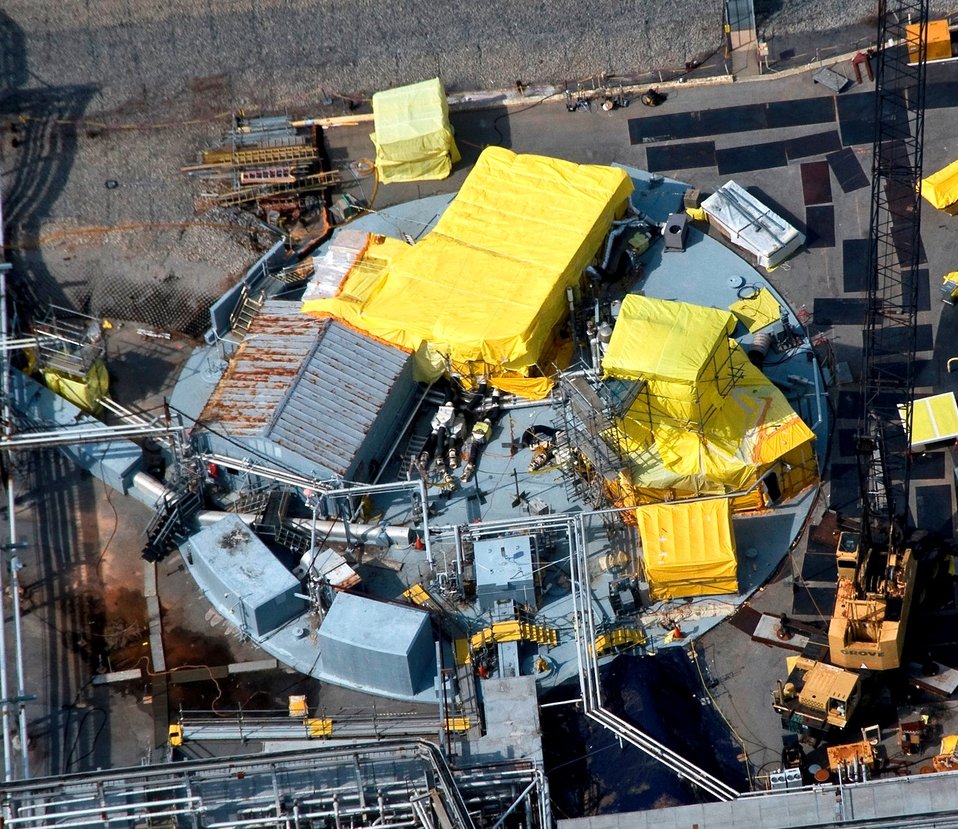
Waste Removal Begins on Highest Volume Sludge Tank at SRS

SRS Tank 13 is pictured here.

Recently (summer 2012), three submersible mixing pumps were inserted into Tank 13, a 1.03 million-gallon underground waste storage tank that held a record 277,000 gallons of radioactive sludge, which is double the amount of sludge normally stored in a waste tank. Bulk waste removal activities for Tank 13 was up on the tank closure schedule and the work began.